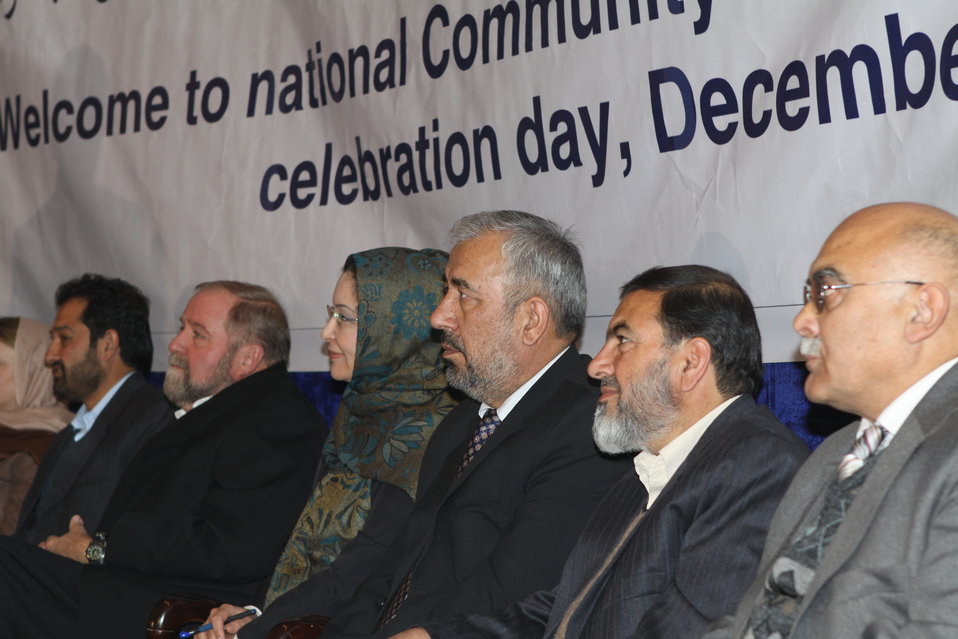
Community Health Workers Celebrated

Kabul, Afghanistan | December 5, 2010 — In support of the United Nations designated International Volunteer Day for Economic and Social Development, Afghanistan’s Ministry of Public Health celebrated its annual Community Health Worker Day today. Acting Minister of Public Health Dr. Suraya Dalil, USAID Senior Deputy Mission Director Robert Hellyer, other government officials, and international donors joined in recognizing the critical contribution of community health workers in Afghanistan and encouraging them to continue their voluntary support to their communities.
The event praised the contributions of the more than 22,000 volunteers throughout the country who deliver community level health-education, counseling, and services out of village health posts located in private homes. The Ministry of Public Health envisioned that community-based healthcare programs will actively encourage communities and families to adopt healthy lifestyles and behaviors, and provide families access to high quality and socially acceptable preventative medicine and life-saving services.
“We have 22,000 community health workers in Afghanistan that are able to implement the basic and standard medicines. They all have been trained through a job description,” said Minister Dalil. Addressing the health workers, she added, “I am proud and feel powerful that I have people like you.”
USAID-funded health projects collaborate closely with the Ministry of Public Health to improve the health and nutritional status of Afghans, provide quality primary healthcare, and promote healthy behaviors at the community and household-levels. USAID supported the training of more than 9,000 of the volunteer community health workers currently working in Afghanistan.
“On behalf of the American people, I congratulate the Community Health Workers for their diligence to gain the skills and knowledge necessary to serve their communities in this important role,” said USAID Senior Deputy Mission Director Hellyer. “USAID strongly supports community based health care and believes that quality community-based health services are essential to reaching Afghanistan’s Millennium Development Goals.”
To support the Basic Package of Health Services, USAID assisted in developing the community health worker training manual, helped train community health worker supervisors and master-trainers, facilitated in-service training, and produced and developed reporting tools, job aids, and education materials.